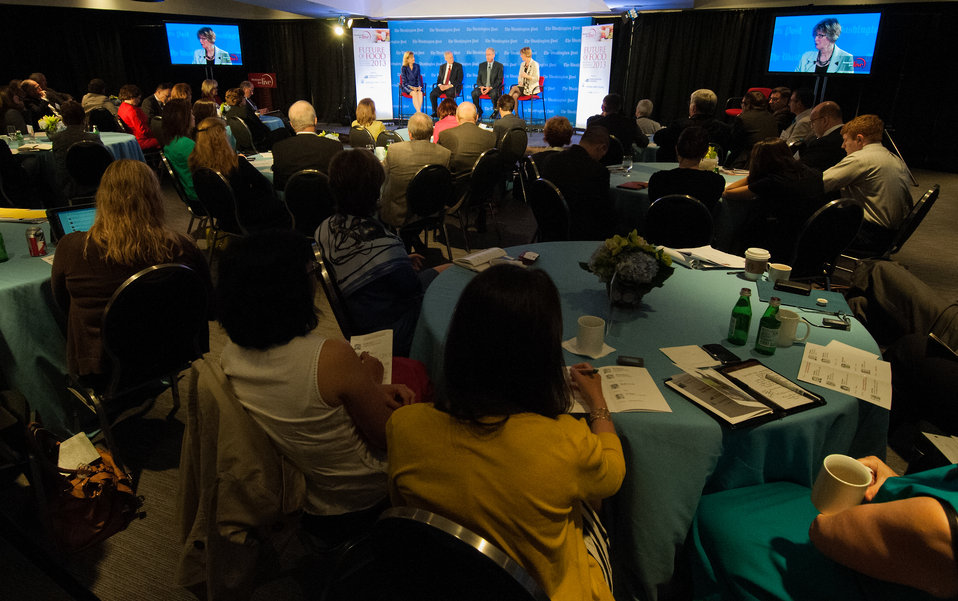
(L to R) Washington Post Live Editor Mary Jordan, United Fresh Produce Association President and Chief Executive Officer (CEO) Tom Stenzel, Dairy Farmers of America President and Chief Executive Officer (CEO) Rick Smith, and National Corn Growers Association President Pam Johnson chaired the panel, From the Farm: Innovations and the Latest Advances in Food Production, during the annual live forum, “Future of Food: Building a Sustainable Food System 2013,” sponsored by the Washington Post Live in Washington, D.C. on Wednesday, May 22, 2013. Agriculture Secretary Tom Vilsack, leading agricultural, government and nutrition experts discussed expanding healthy, sustainable food systems including public-private partnerships, the market’s role in nutrition and the future of agricultural innovation.